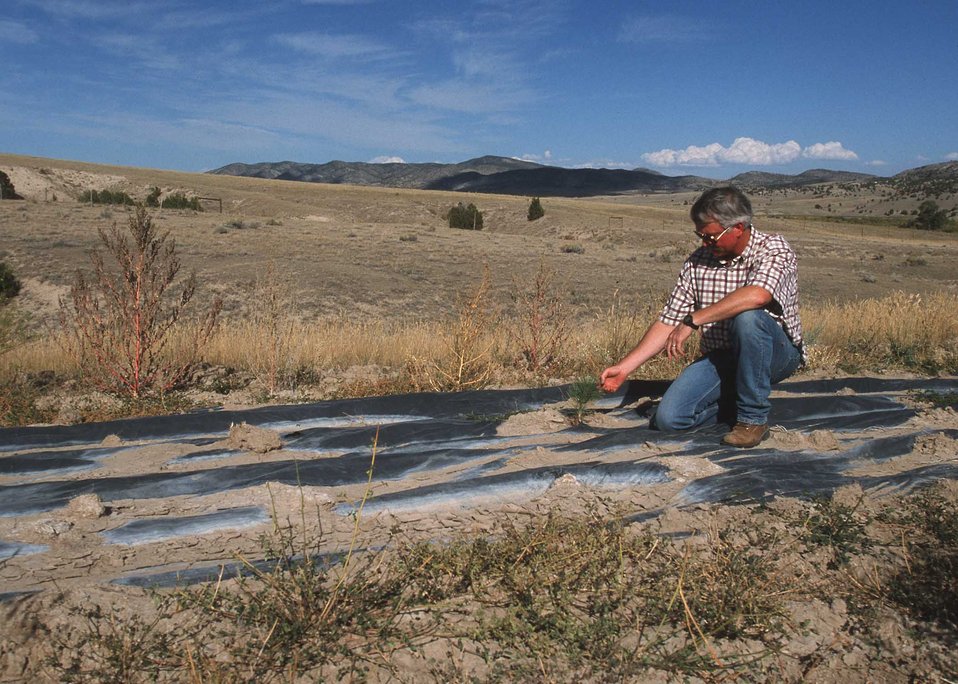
Windbreak planting in Jefferson County MT.